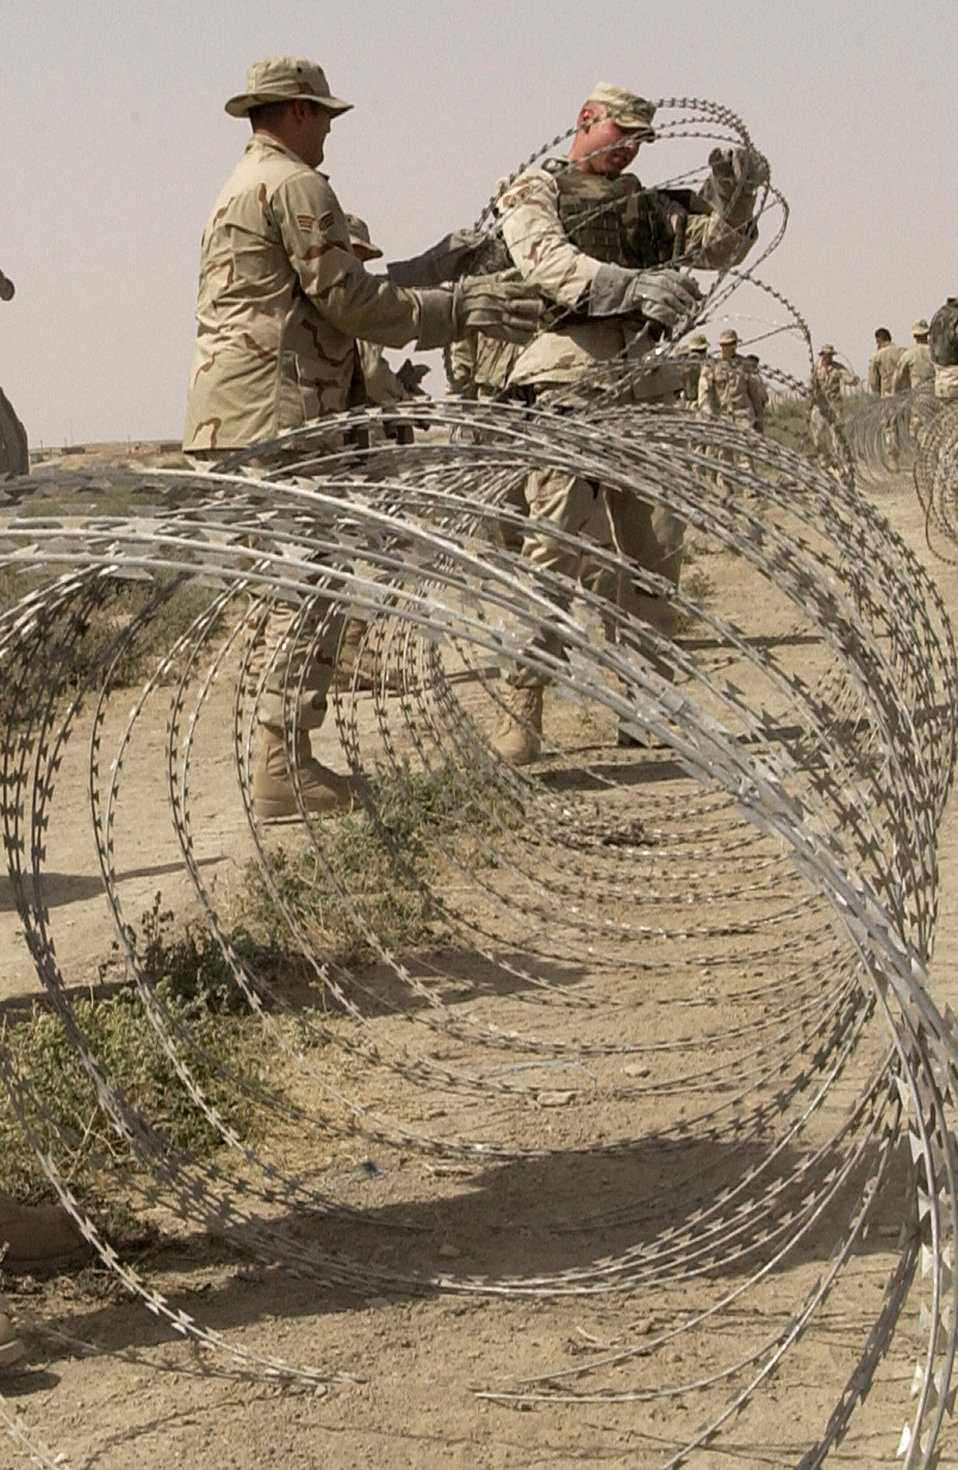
Through the wire

TALLIL AIR BASE, Iraq -- Airman from the base assist in securing the perimeter by with concertina wire here May 27.